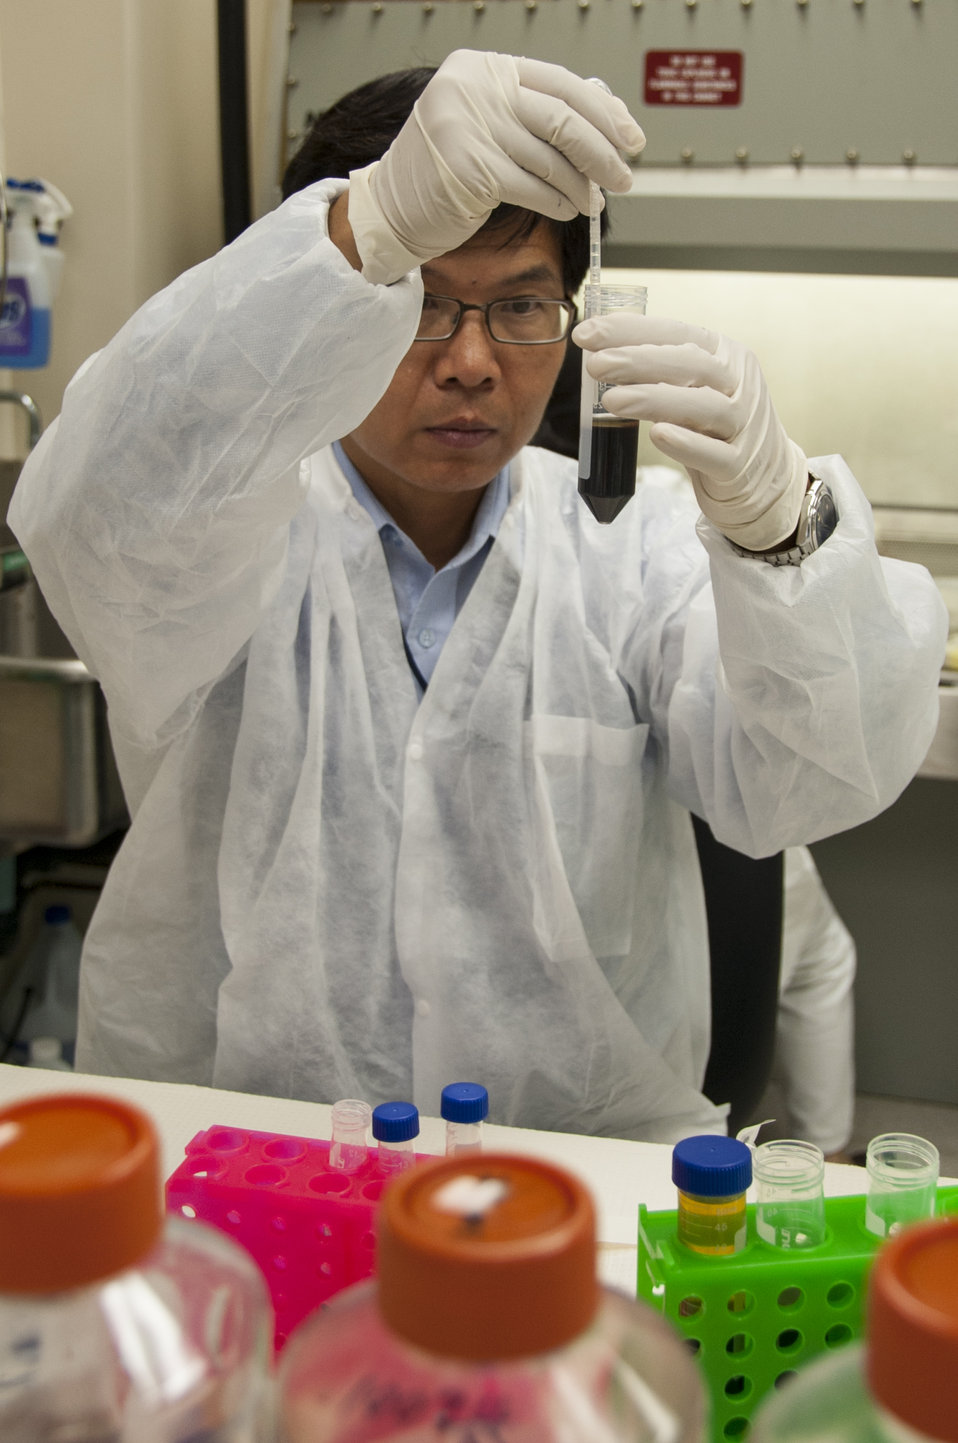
Blood Research: Saving Lives (8517)

Jason Liu, Ph.D., a laboratory chief at FDA’s Office of Blood Research and Review, collects plasma from processed whole blood. FDA is responsible for the safety of our nation’s blood supply and is at the forefront of evaluating and encouraging innovative technologies for protecting it.

Read this Consumer Update to learn more: Advances in Saving Lives with Blood